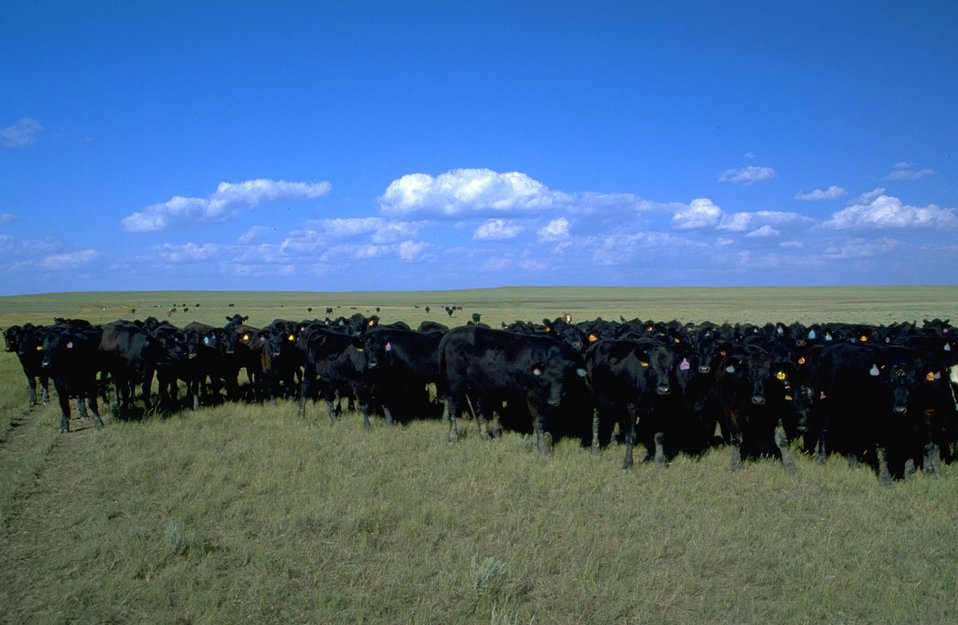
Yearling Cows on summer Range